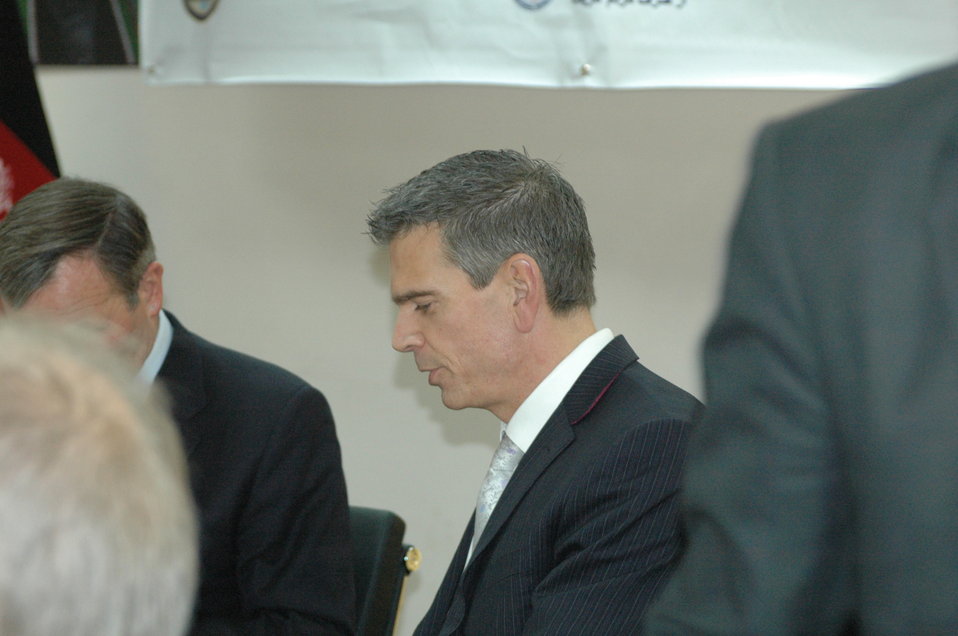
Community Based Stabilization Grants Ceremony, December 7, 2010